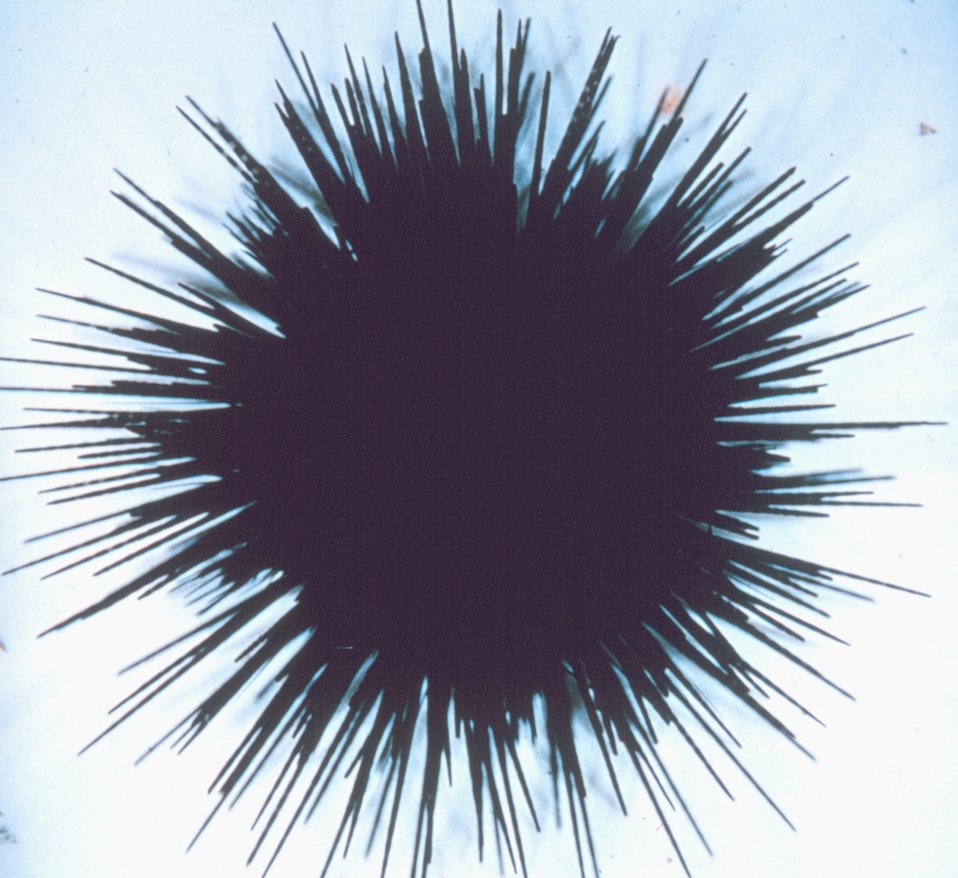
Sea urchin, Echinothrix diadema, live, dorsal view.